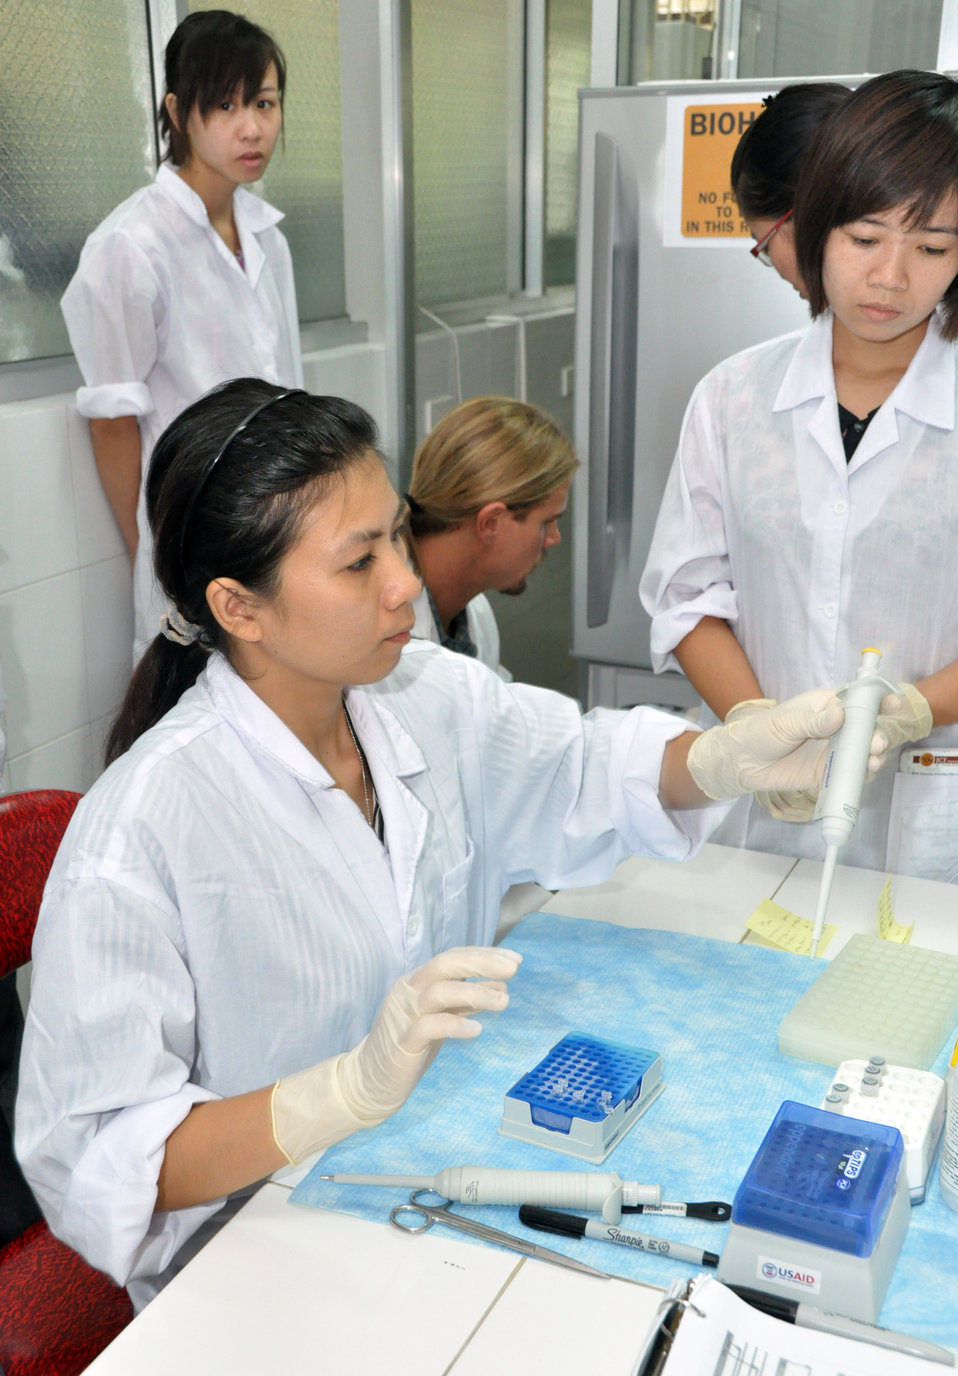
Animal virus detection lab training in Hanoi

Trainee learns how to detect viruses in Hanoi under a USAID program.